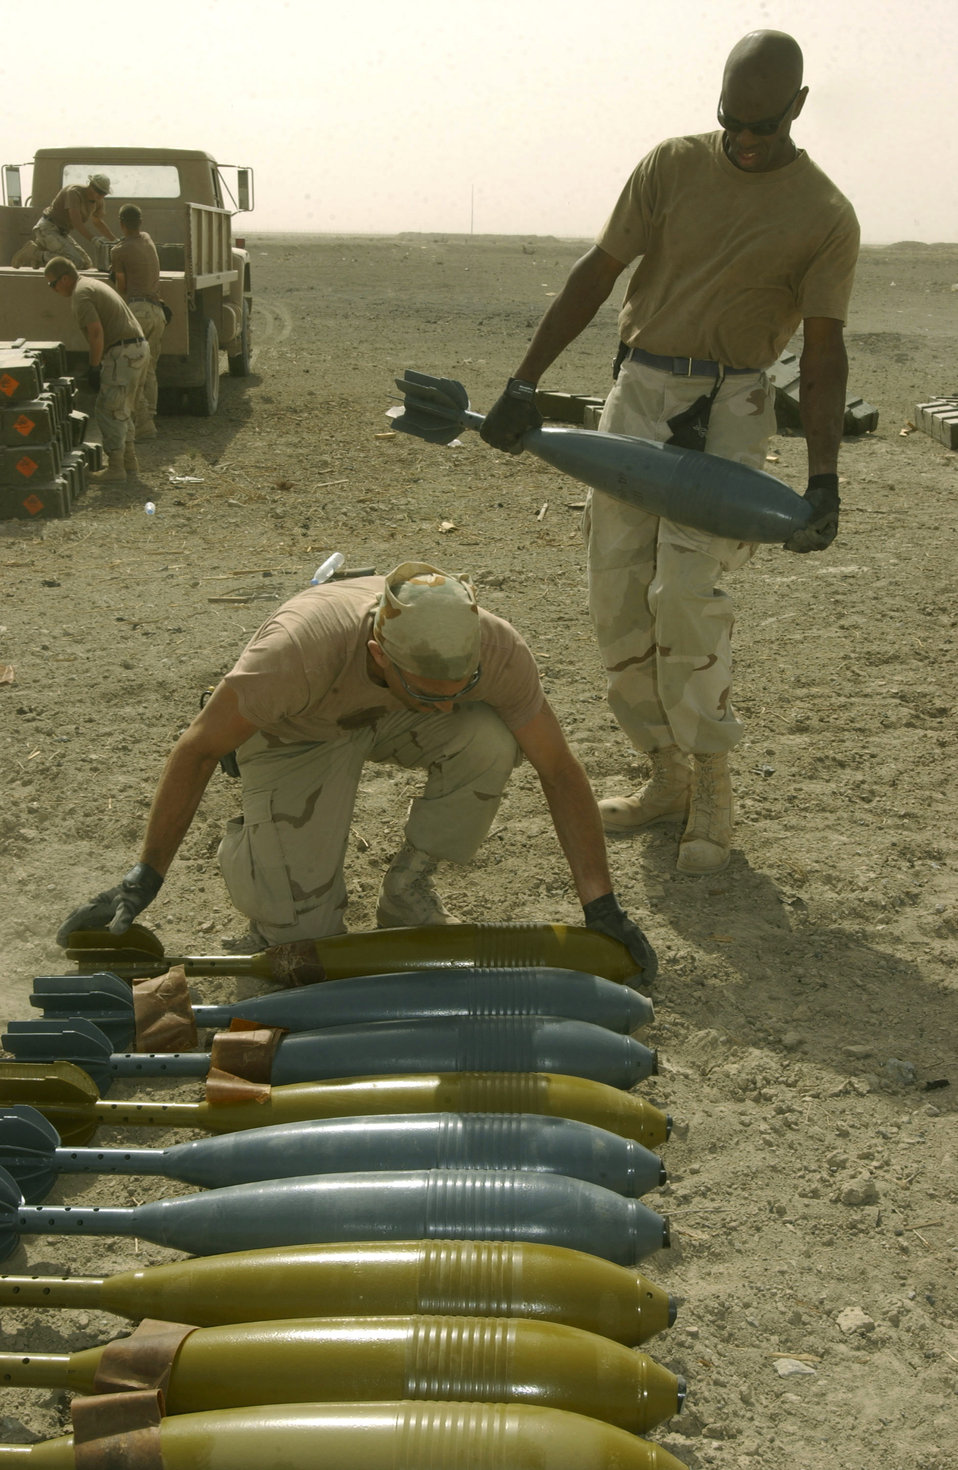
Iraqi Freedom

TALLIL AIR BASE, Iraq -- (Left to right) Staff Sgts. Robert Rondash and Travis Smith, of the 332nd Expeditionary Civil Engineer Squadron, line up 160 mm Chinese mortars Oct. 24 to destroy captured-enemy munitions that could be used against U.S. and coalition forces here.